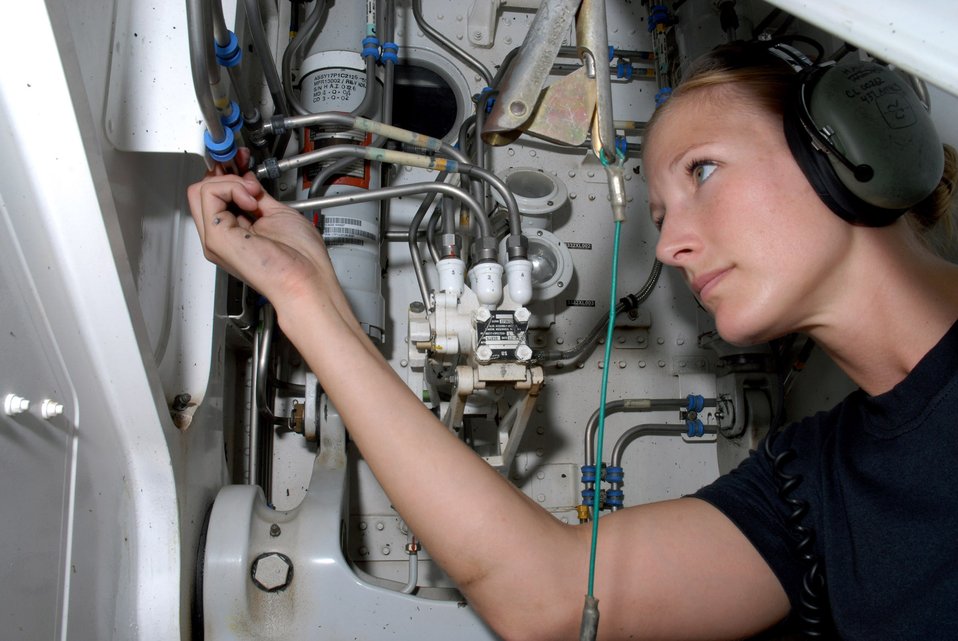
Everything’s looking good

Staff Sgt. Sarah Hall inspects fittings in the nose wheel well of a C-17 Globemaster III Oct. 8 to ensure there are no deficiencies. Sergeant Hall, deployed from Charleston Air Force Base, S.C., is with the 8th Expeditionary Air Mobility Squadron at a deployed location in Southwest Asia.